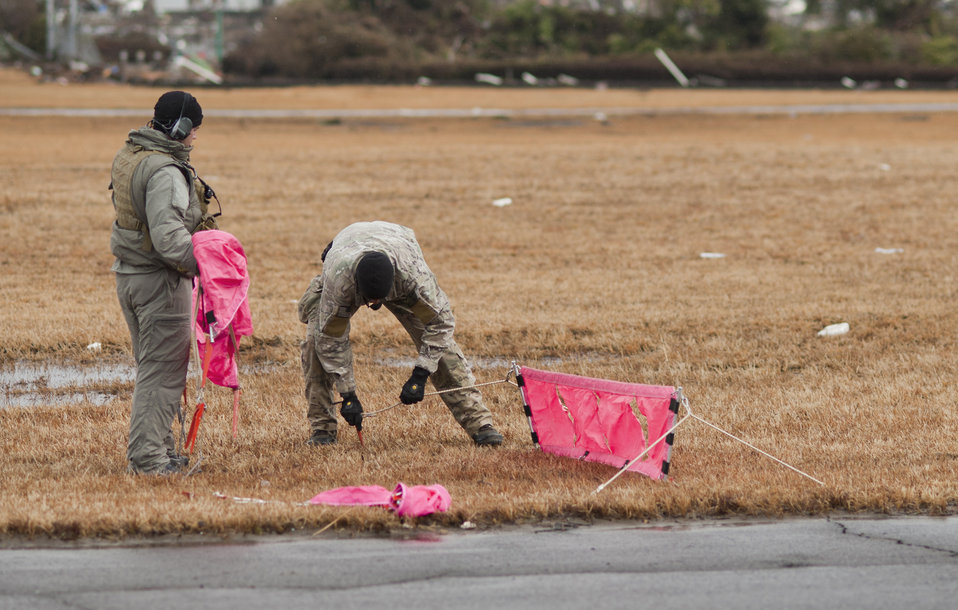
Headline

U.S. Air Force combat controllers from the 320th Special Tactics Squadron (STS) set up flight line markers to inform pilots of the useable space on the runway at Sendai Airport, Japan, March 16, 2011. Members of the 320th STS from Kadena Air Base, Japan, deployed to Sendai Airport to help clear the runway and make it ready for fixed-wing aircraft traffic.